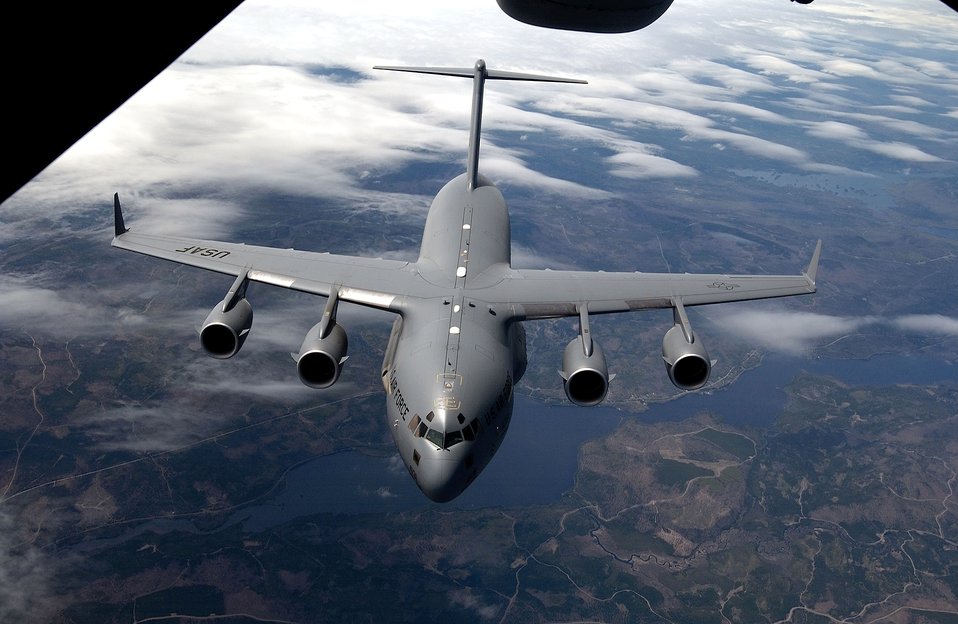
Preparations for Hurricane Gustav

A C-17, like the one shown here, left McChord Air Force Base, Wash., Aug. 30, picked up a contingency response team and equipment from Travis AFB, Calif., and delivered them to New Orleans to assist with evacuation plans before Hurricane Gustav hit the Gulf Coast.